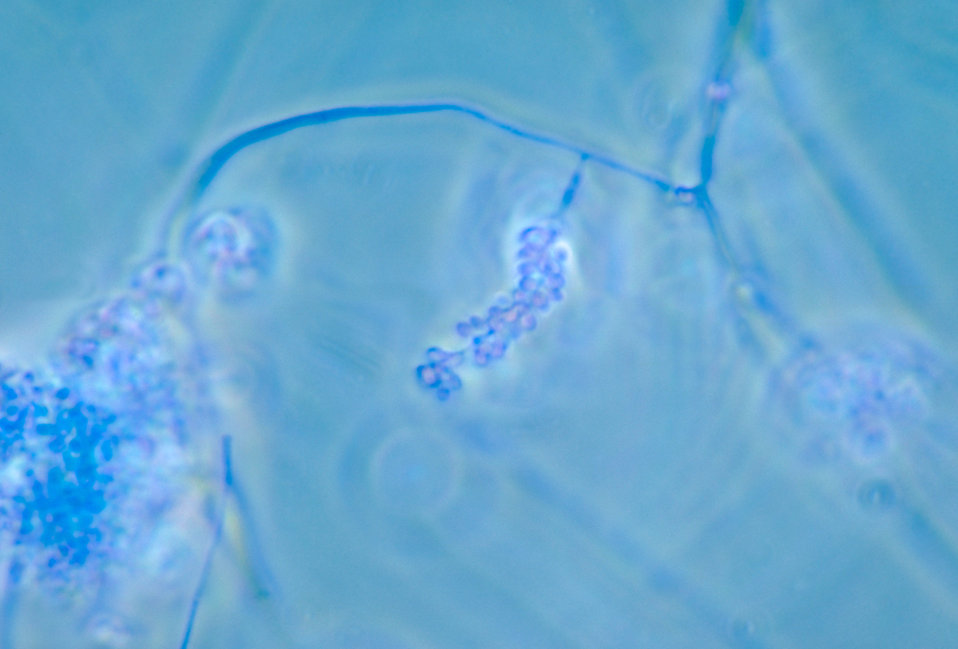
This is a photomicrograph of young conidiophores of a Tritirachium sp. fungus.